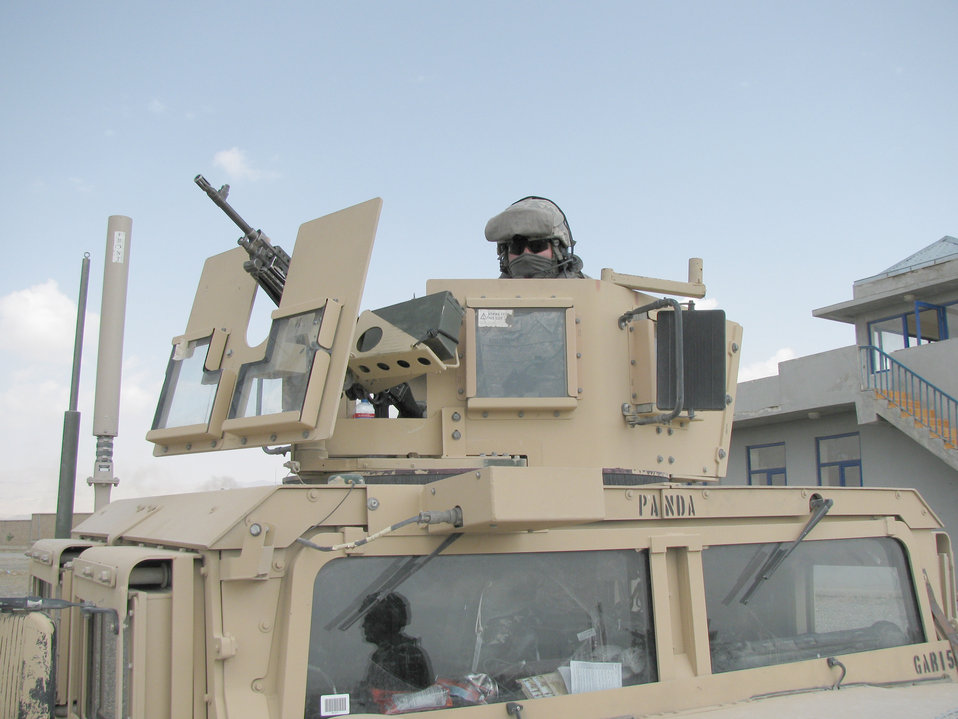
Staff Sgt. Alexander Yessayan

Staff Sgt Alexander Yessayan sits in the gunner's seat during a site survey while deployed to Afghanistan in 2009. Sergeant Yessayan was recognized in the Air Force's